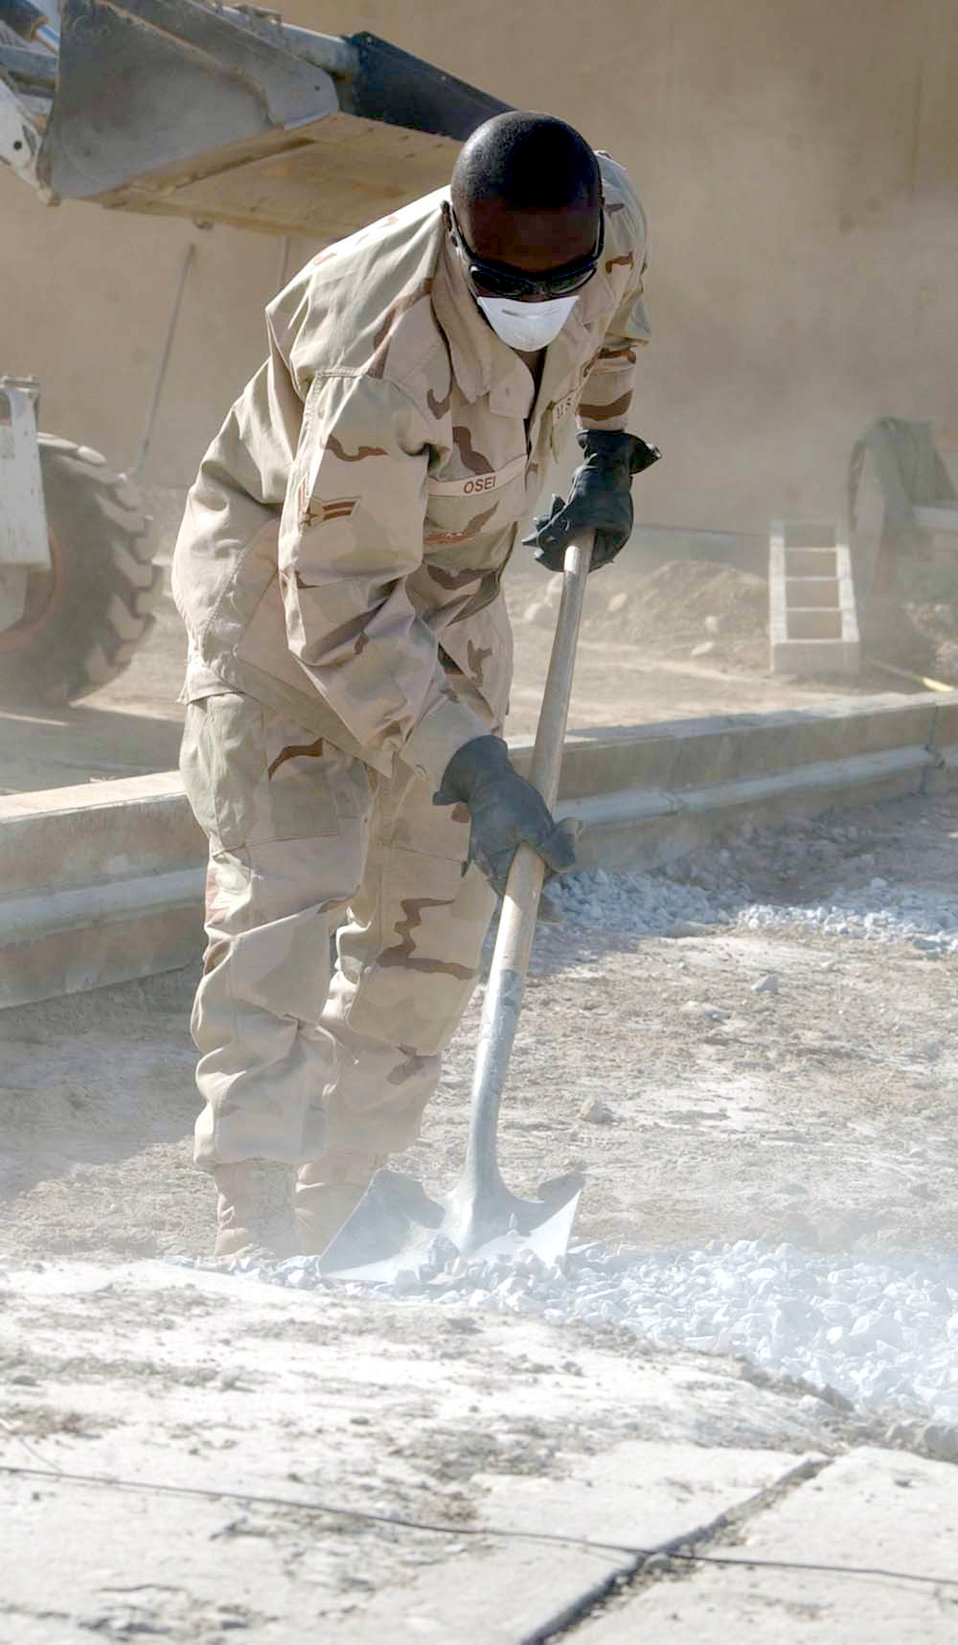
Building a better Bagram

BAGRAM AIR BASE, Afghanistan -- Airman 1st Class Collins Osei levels gravel before concrete is poured for a new A-10 Thunderbolt II maintenance building's driveway. Airman Osei is a civil engineer with the 455th Expeditionary Operations Group, and he is deployed from Ellsworth Air Force Base, S.D.